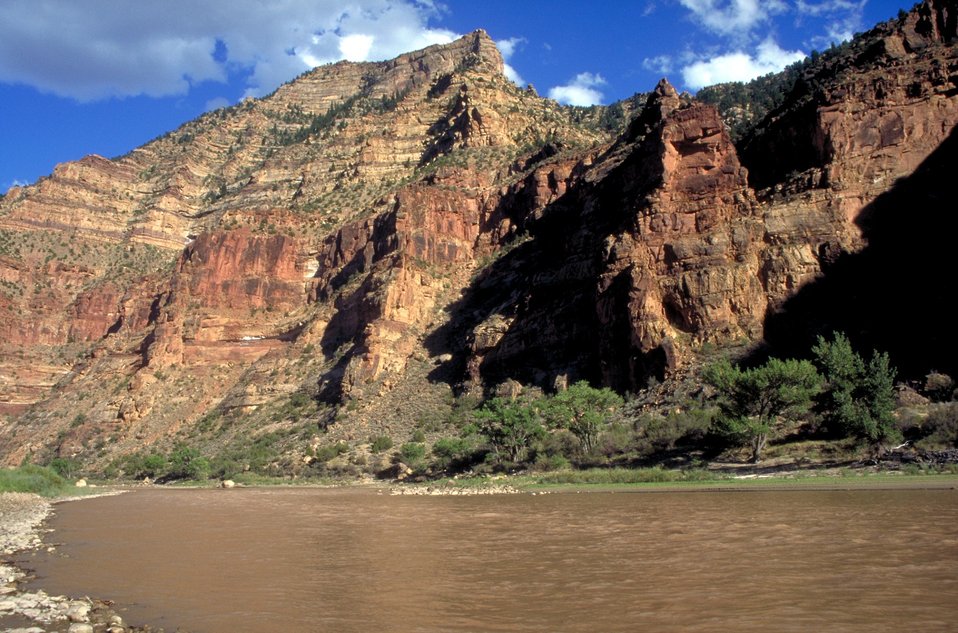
Desolation/Gray Canyons near Price, Utah.